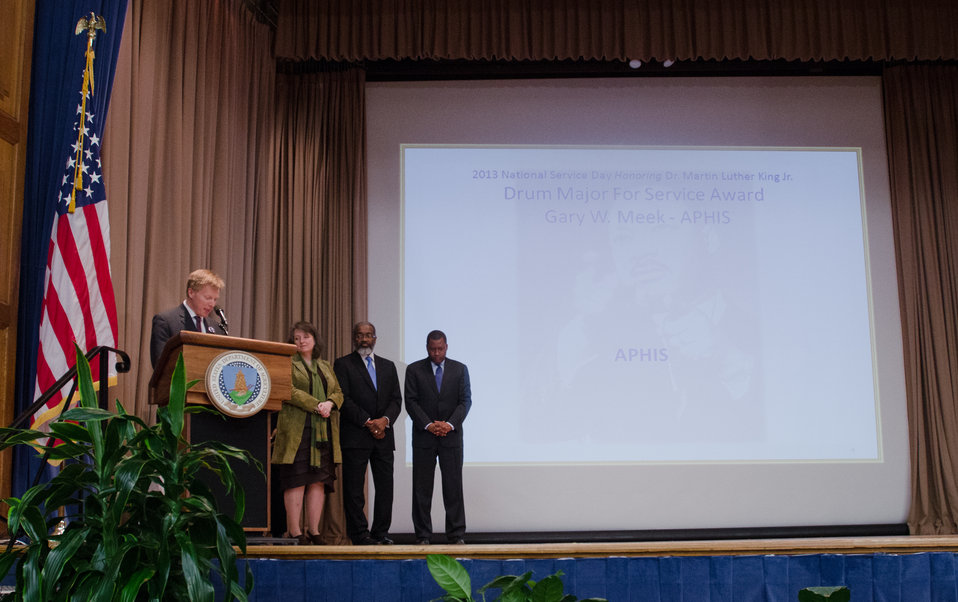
U.S. Department of Agriculture (USDA) Director Faith Based and Neighborhood Partnerships Max Finberg, left, reads the citation of award to Animal and Plant Health Inspection Service (APHIS) Mail Center Manager Gary W. Meek, a recipient of the Dr. Martin Luther King, Jr. National Service Day Drum Major Service Award, Meek was not able to receive it in person, in the Jefferson Auditorium, Washington, D.C. on Tuesday, Jan. 15, 2013 (L to R Agriculture Deputy Secretary Kathleen Merrigan, USDA Animal and Plant Health Inspection Service (APHIS) Administrator Dr. Gregory Parham, and Agriculture Assistant Secretary for Civil Rights Dr. Joe Leonard).